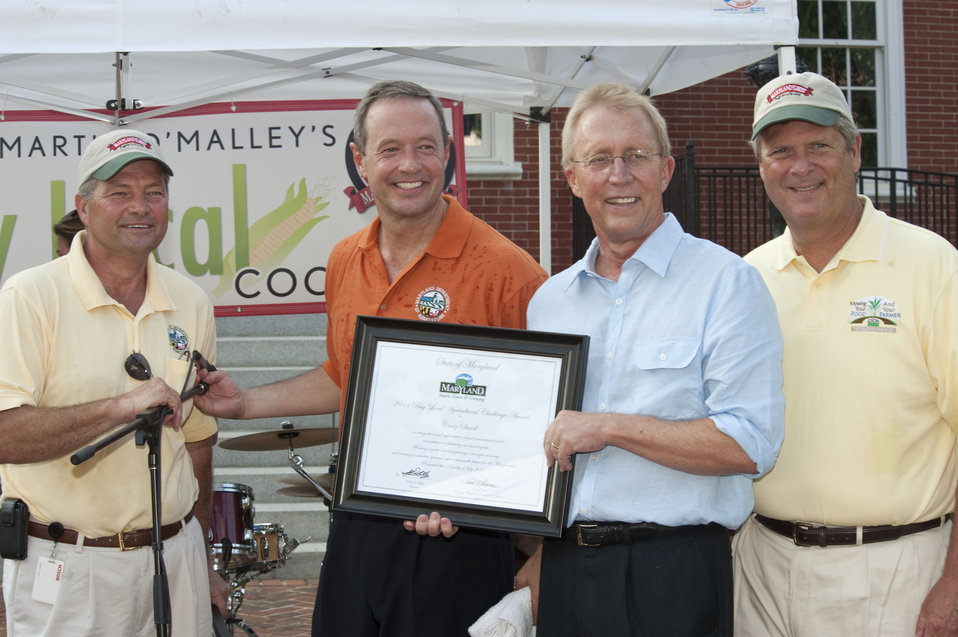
Right to left, U.S. Department of Agriculture Secretary Tom Vilsack, (right), Co-Host 4th Annual Maryland Buy Local Cookout, Craig Sewell, Maryland Governor Martin O'Malley, and Maryland Secretary of Agriculture Buddy Hance present theBuy Local Ag Challenge Award to Craig Sewell in Annapolis MD, on Thursday, July 21, 2011.